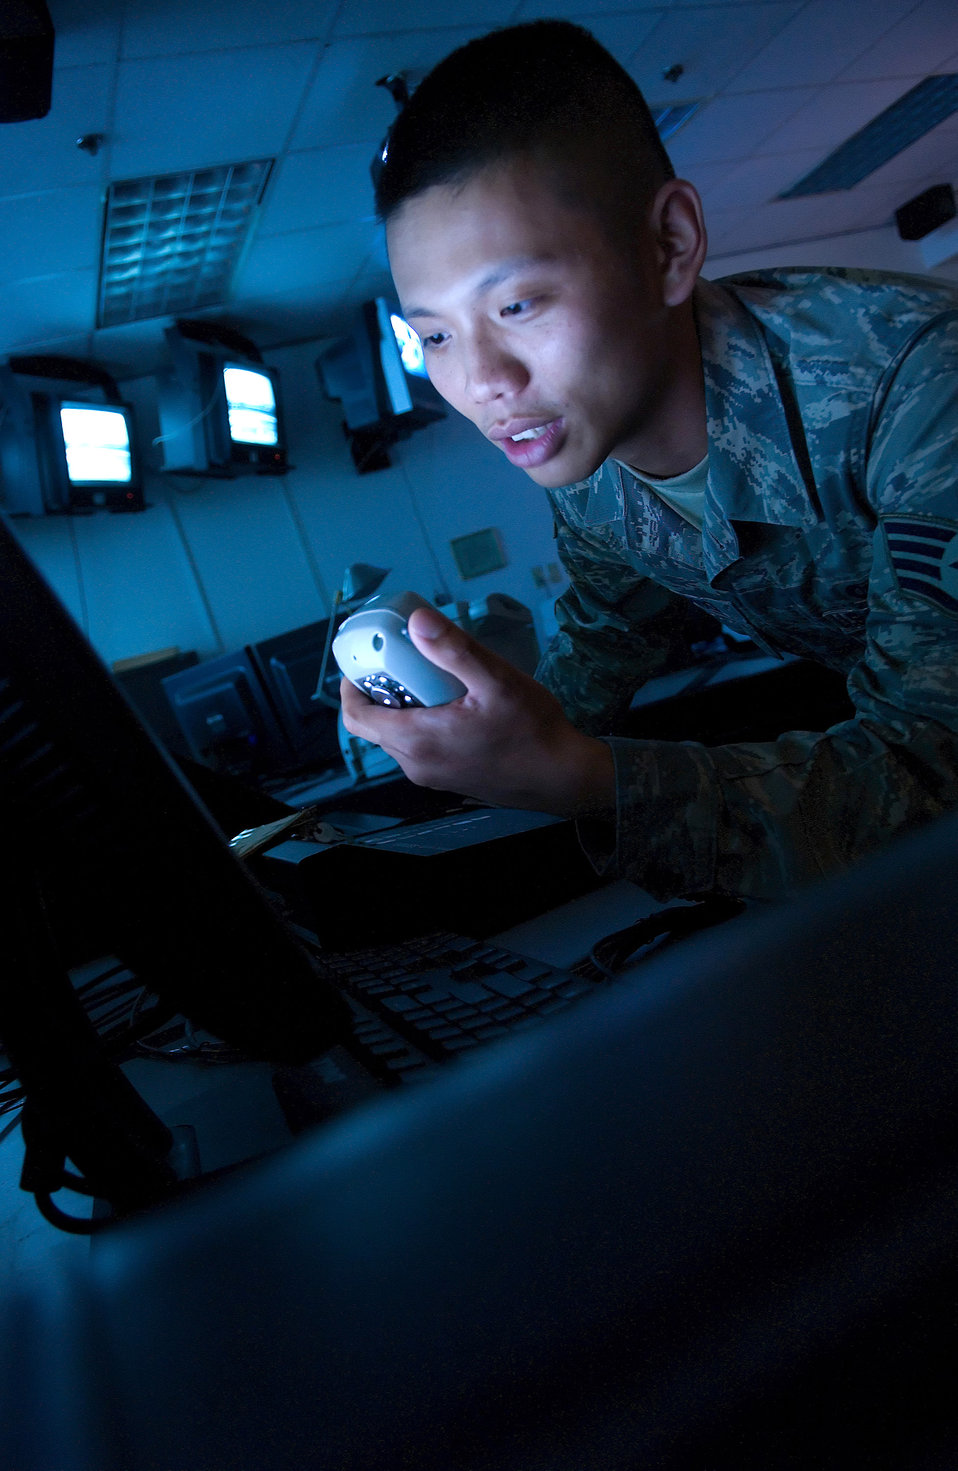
Command post keeps gears turning on global mobility

Staff Sgt. Alman Chiang, 436th Airlift Wing command post controller at Dover Air Force Base, Del., tests the base's Giant Voice system Aug. 12 to ensure the equipment is mission ready. Operating the Giant Voice system is only one aspect of a controller's diverse job.